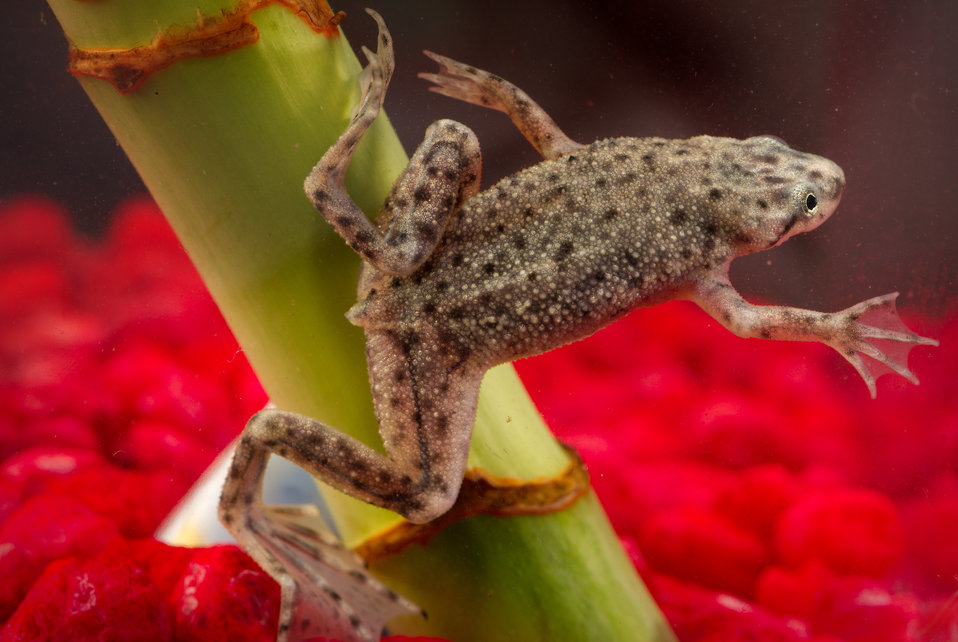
This photograph depicts an African dwarf frog, Hymenochirus boettgeri.